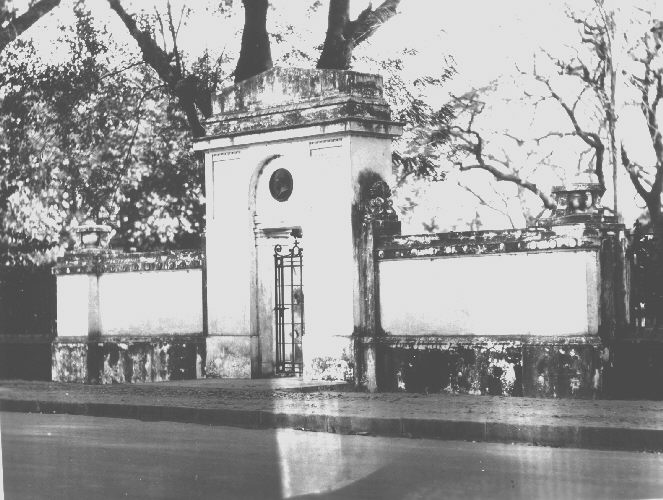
Ronald Ross Monument